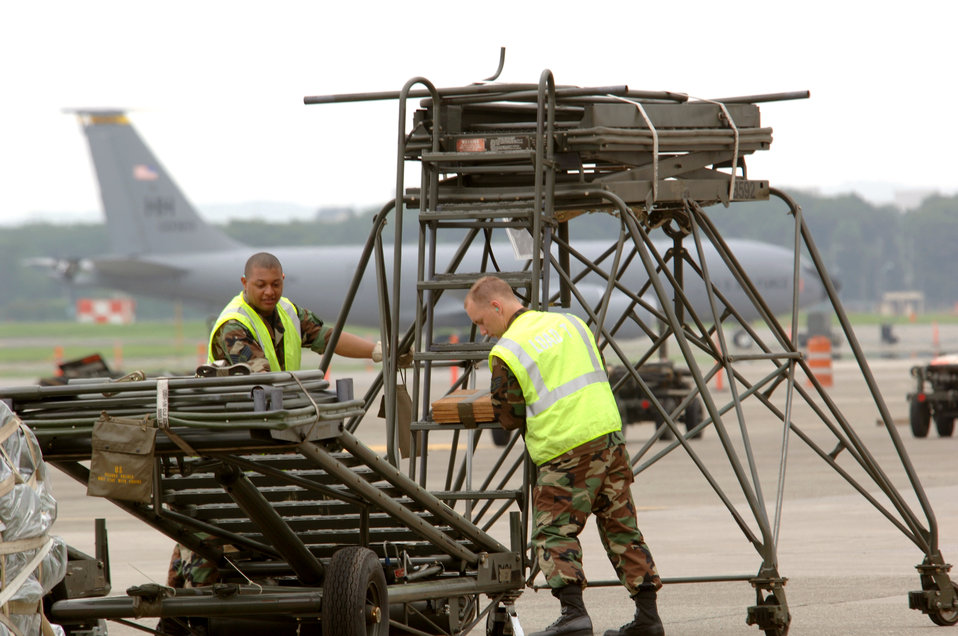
Movin' out

YOKOTA AIR BASE, Japan -- Staff Sgts. Jose Cabrera (left) and Johnny Golson move a maintenance stand on the flightline during an operational readiness exercise. They are assigned to the 374th Airlift Wing here.